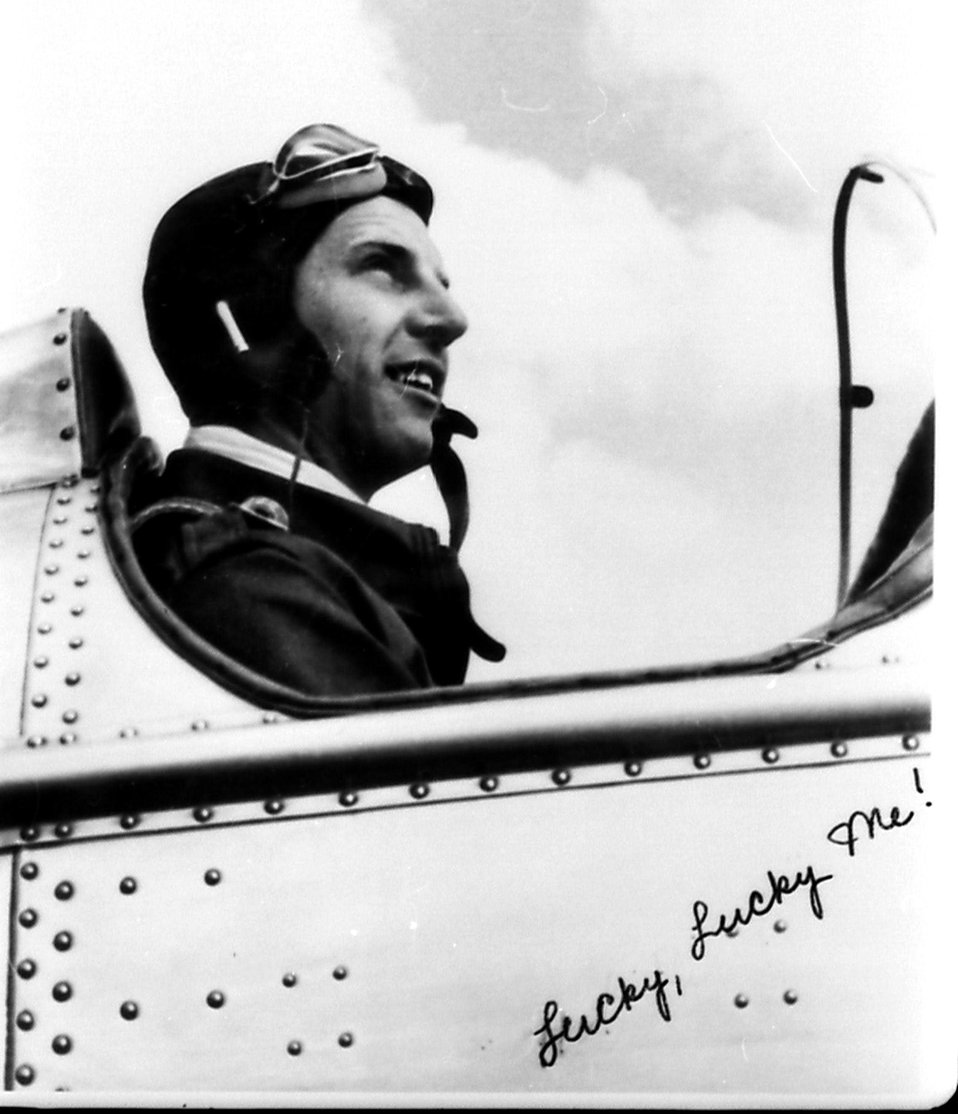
Lt. George A. Whiteman sits in the cockpit of his training school aircraft. The photo is taken from a postcard Lt. Whiteman sent his sister upon graduation in 1940. The words